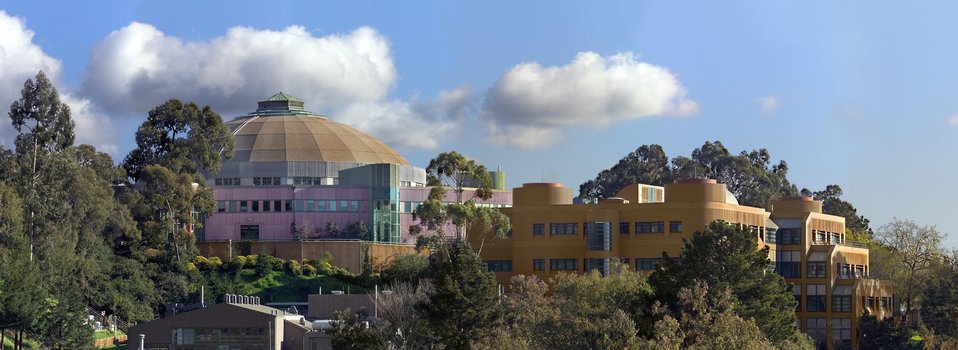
LAWRENCE BERKELEY NATIONAL LABORATORY WITH ADVANCED LIGHT SOURCE DOE'S LAWRENCE BERKELEY NATIONAL LABORATORY IN CALIFORNIA IS A LEADER IN SCIENCE AND ENGINEERING RESEARCH. THE LAB CONDUCTS UNCLASSIFIED RESEARCH ACROSS A WIDE RANGE OF SCIENTIFIC DISCIPLINES WITH KEY EFFORTS IN FUNDAMENTAL STUDIES OF THE UNIVERSE, QUANTITATIVE BIOLOGY, NANOSCIENCE, NEW ENERGY SYSTEMS AND ENVIRONMENTAL SOLUTIONS, AS WELL AS THE USE OF INTEGRATED COMPUTING AS A TOOL FOR DISCOVERY. RCE DOME ON LEFT.